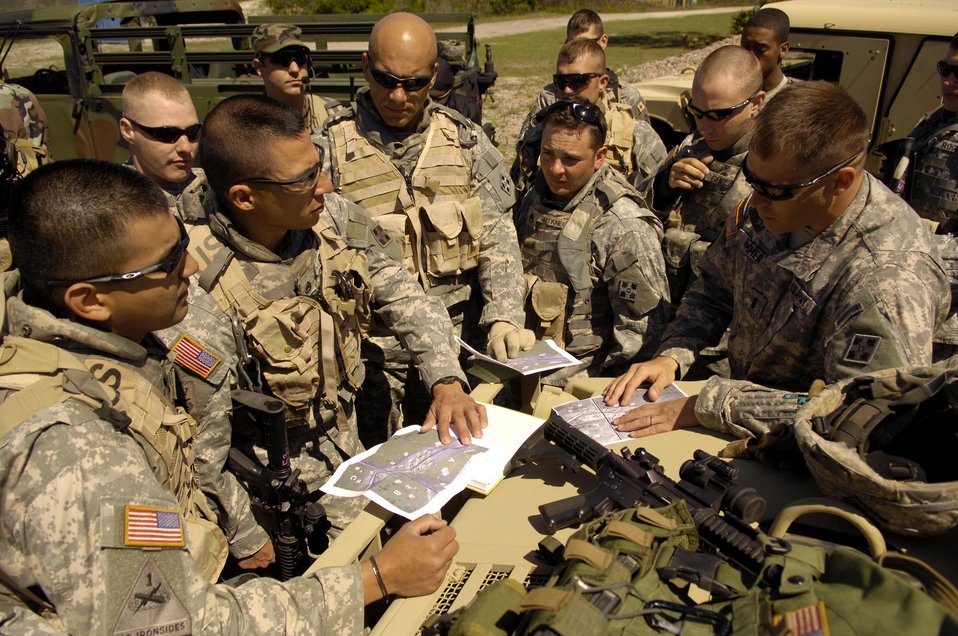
Atlantic Strike V begins at Avon Park

Members of the 4th Infantry Division from Fort Hood, Texas, receive an intelligence briefing before participating in Atlantic Strike V April 16 at Avon Park, Fla. Atlantic Strike is a joint forces training event involving joint terminal attack controllers from the Army, Air Force and Marines and is held semi-annually at the Avon Park Air Ground Training Complex.